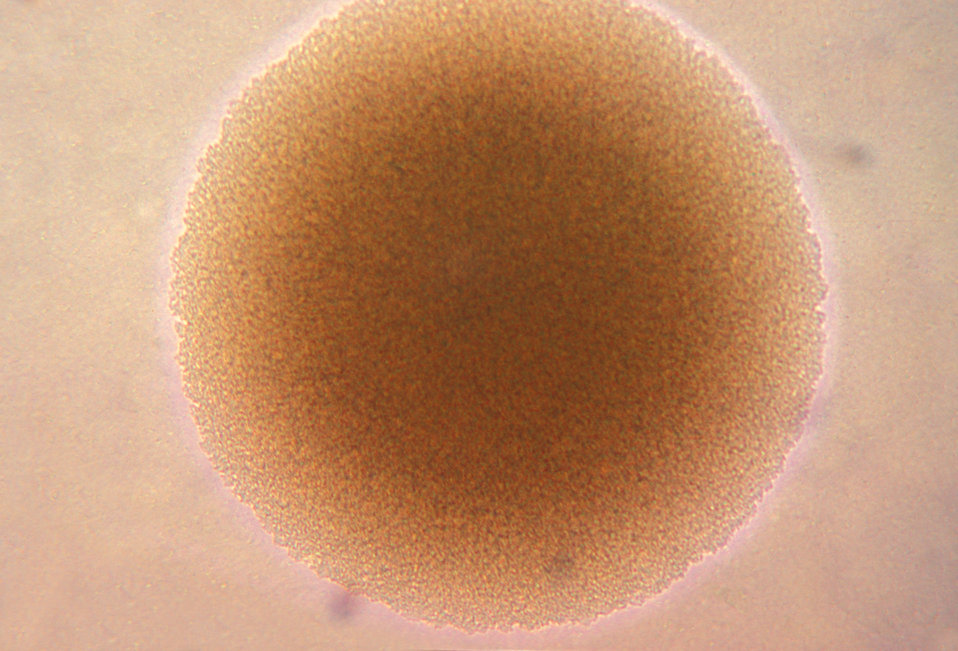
This is a photomicrograph of a T3 colony of Neisseria gonorrhoeae bacteria; Magnified 100X.